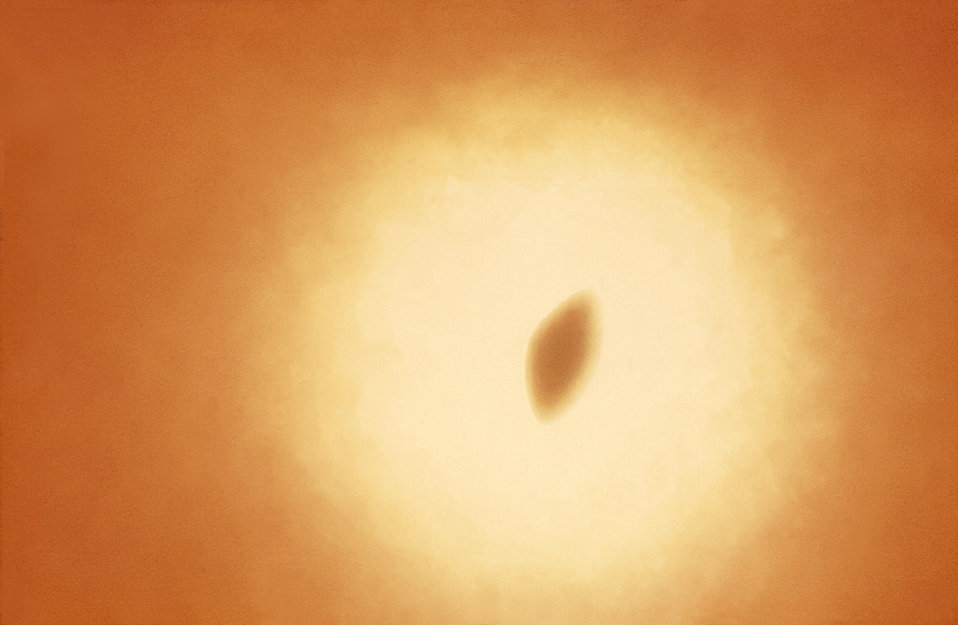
Magnified 100x, this 1977 photograph depicted a Petri dish filled with trypticase soy agar medium containing 5% defibrinated sheep's blood, i.e., blood agar plate (BAP). A loop of diluted culture of Streptococcus pyogenes was put into the melted agar (50oC) just before the blood was added to the melted agar. The melted agar with blood was allowed to solidify, and then incubated at 35oC for 24 hours in a normal atmosphere. The culture grew subsurface bacterial colonies, one of which was seen here. The characteristic color changes, i.e., a colorless region surrounding each colony in which the red blood cells in the blood agar medium had been destroyed, or "hemolyzed", indicated that these bacteria were indeed beta-hemolytic in nature.Infection with GAS can result in a range of symptoms:- No illness- Mild illness (strep throat or a skin infection such as impetigo)- Severe illness (necrotizing faciitis, streptococcal toxic shock syndrome)